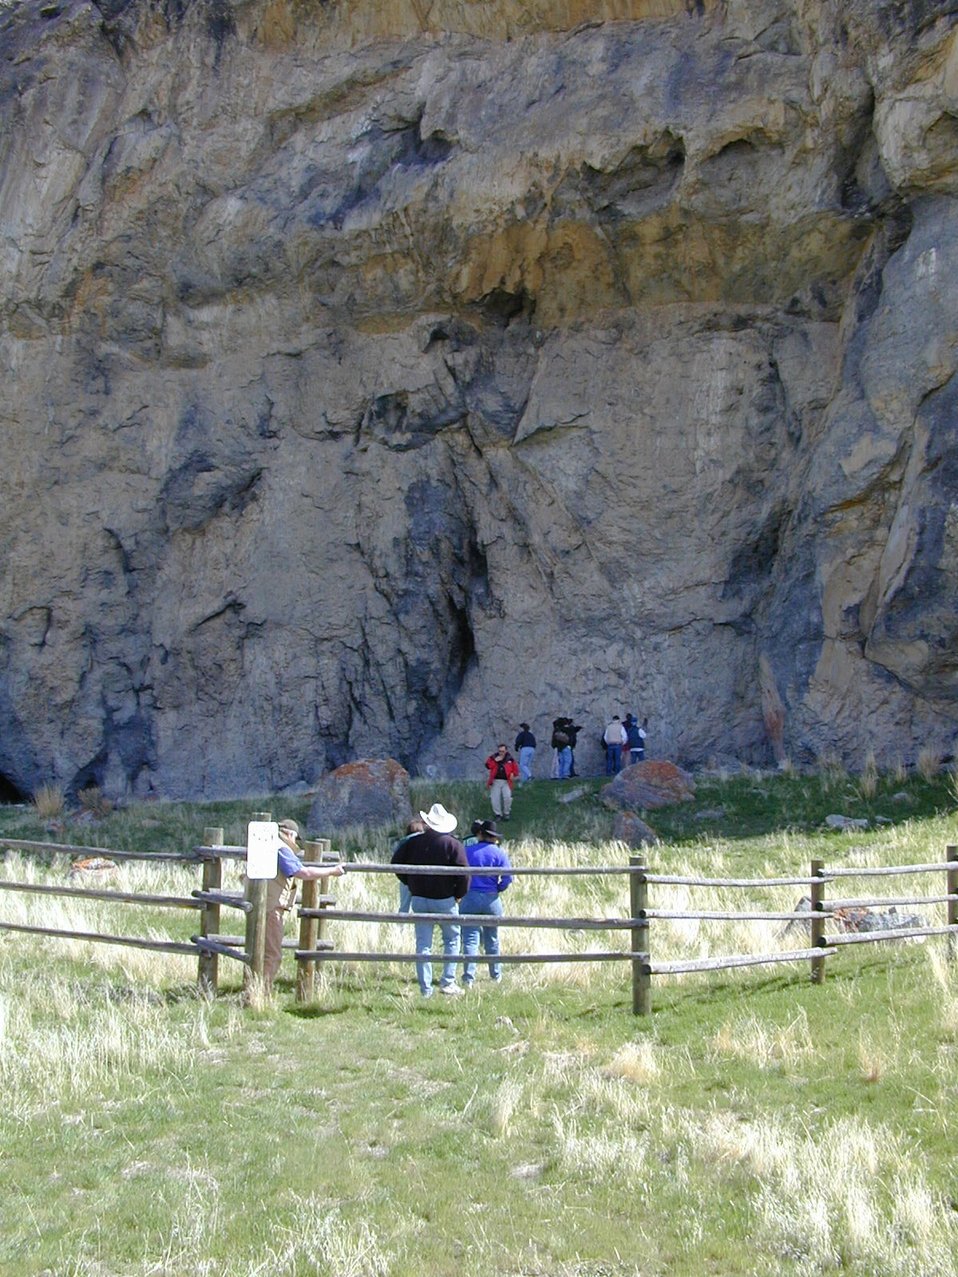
Bison and Veratic Rock Shelters Birch Creek Valley Idaho Falls Field Office USRD Upper Snake River District